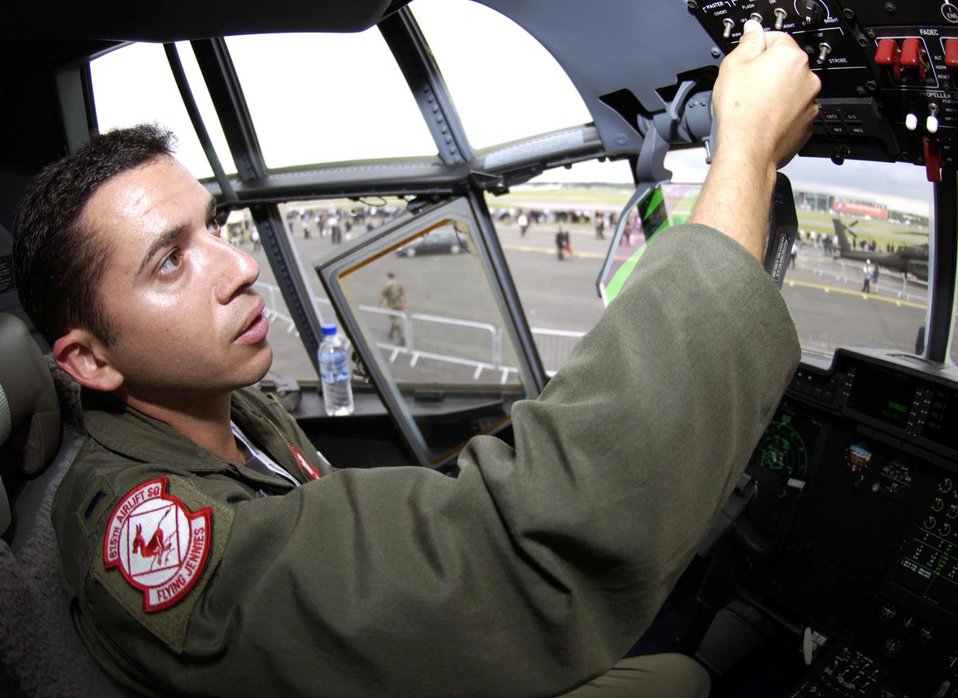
Jolly good show!

FARNBOROUGH, England -- First Lt. Mark Suckow powers up the avionics system on a C-130 Hercules here during the Farnborough International Airshow on July 21. The seven-day airshow ends July 25. Lieutenant Suckow is a C-130 co-pilot and reservist from the 815th Airlift Squadron at Keesler Air Force Base, Miss.